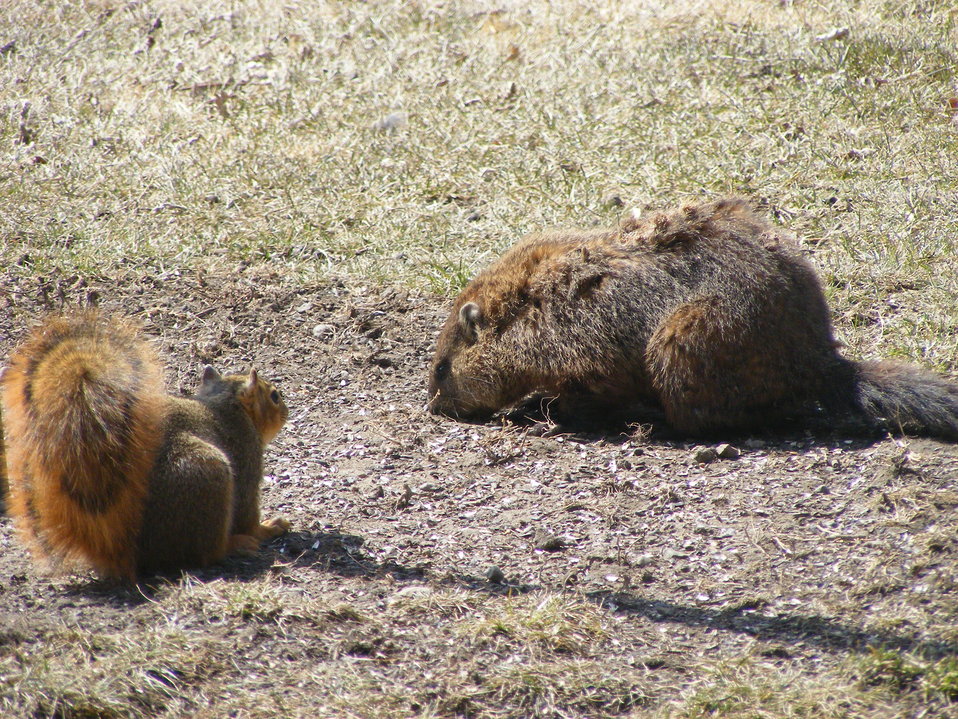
Everyone Loves Sunflowers

A fox squirrel and woodchuck scrounge for sunflower seeds below the bird feeder at Waubay NWR headquarters.